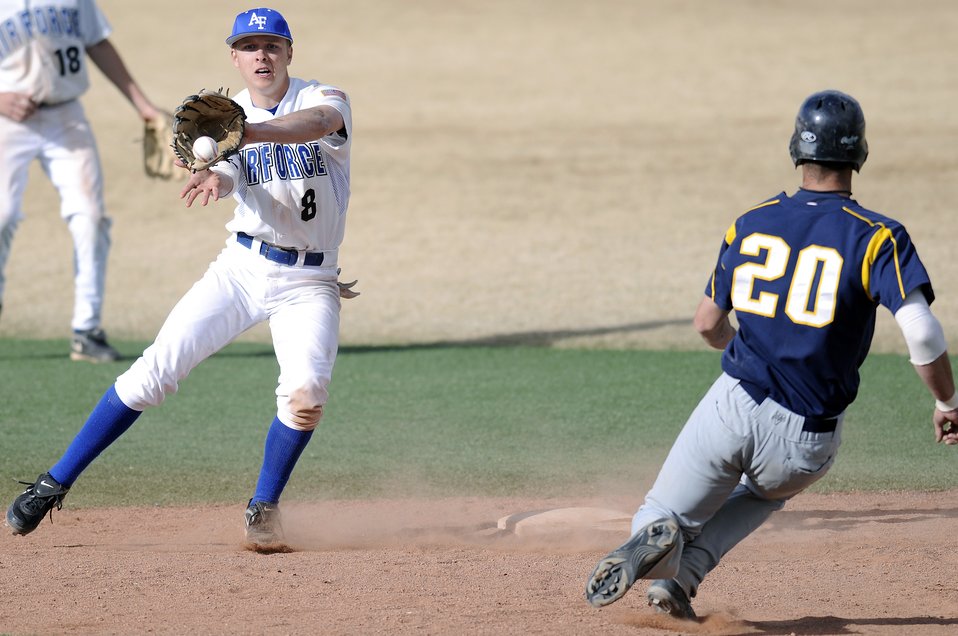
US Air Force Academy, CO

Freshman 2d baseman Adam Hill takes a throw from first base for the force out during the 11-7 win against Colorado Christian at Falcon Field March 17. The win improved the Falcons record to 6-9 on the season. Air Force returns to action with a three-game series at UNLV starting Friday, March 20.